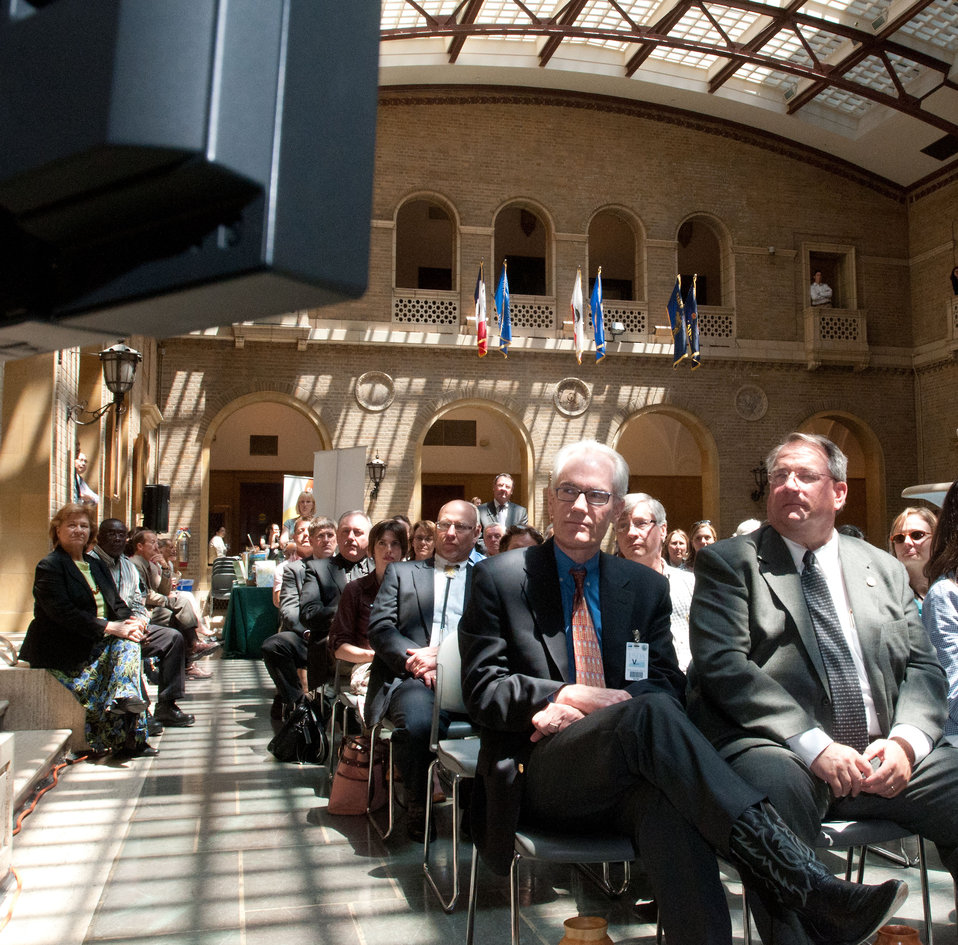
Guests at the International Year of Forests (IYOF) celebration for U.S. Department of Agriculture employees were able to receive a Tree in a Box, during the Friday, June 3, 2011 event on the Patio of the Whitten Building, U.S.Department of Agriculture inWashington, DC.